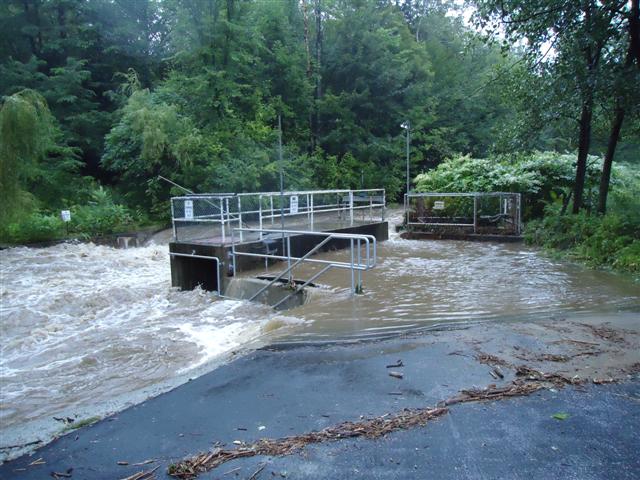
Flooding at Eisenhower National Fish Hatchery

Flooding at Dwight D. Eisenhower National Fish Hatchery in Vermont.